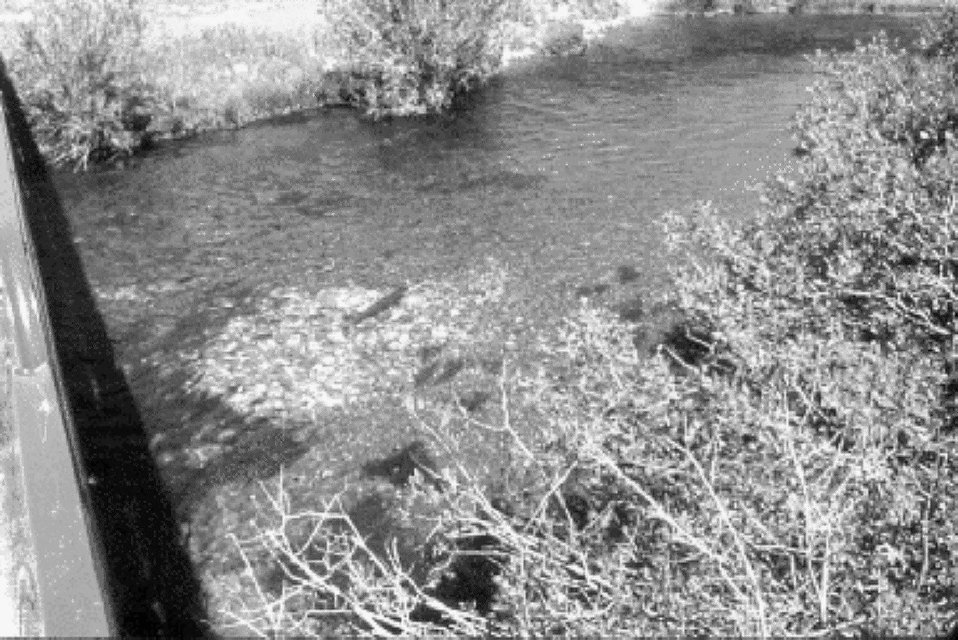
Lemhi Chinook Salmon Field Office UCSC Upper Columbia Salmon Clearwater District